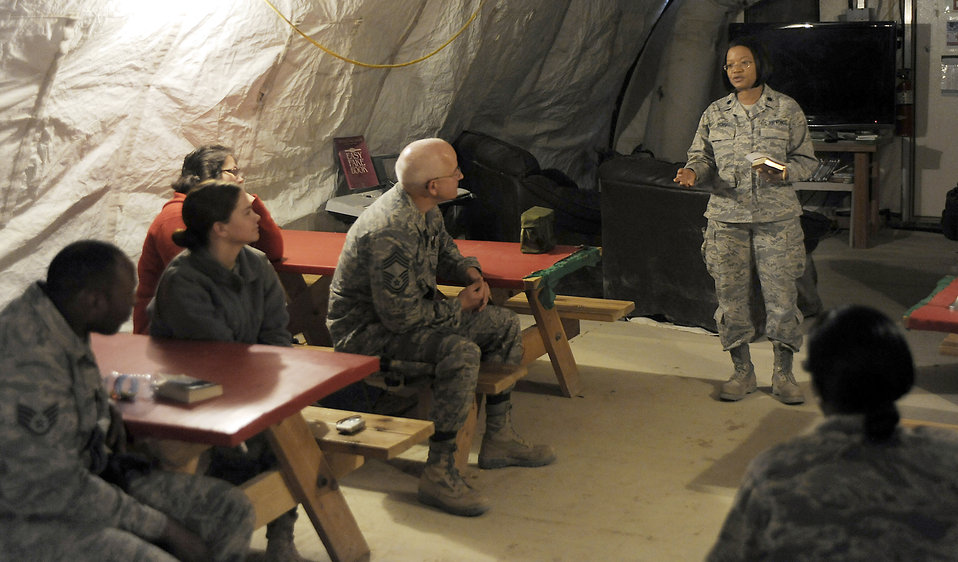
Chaplain field services bring church to warriors

Chaplain (Lt. Col.) Donnette Boyd performs a 10-minute field service, March 12, 2011, at Kandahar Airfield, Afghanistan. Chaplain Boyd conducts these field services at three locations to maximize the number of Airmen she can reach. Chaplain Boyd is assigned to the 451st Air Expeditionary Wing.